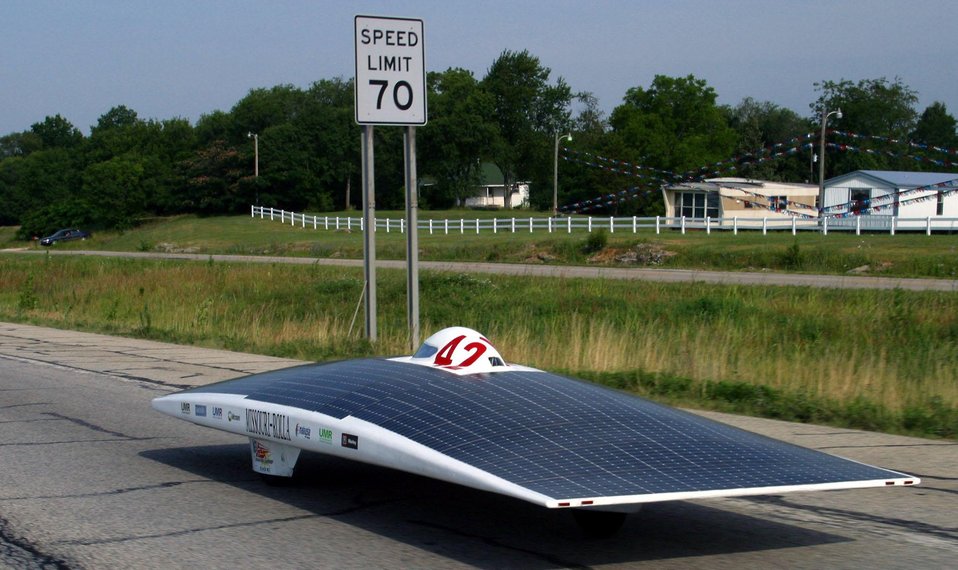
UNIVERSITY OF MISSOURI-ROLLA GOING AT SPEED LIMIT ON ROUTE 66 TOWARD JOPLIN, MO. DURING THE AMERICAN SOLAR CHALLENGE.

THE AMERICAN SOLAR CHALLENGE, THE LONGEST SOLAR CAR RACE IN THE WORLD, IS A DOE SPONSORED EDUCATIONAL EVENT IN WHICH TEAMS COMPETE TO BUILD AND RACE SOLAR-POWERED CARS. TWENTY UNIVERSITIES PARTICIPATED IN THIS YEAR'S EVENT WHICH STARTED IN CHICAGO, ILLINOIS ON JULY 13 AND FOLLOWED ROUTE 66 FOR 2300 MILES TO CLAREMONT, CALIFORNIA, ENDING ON JULY 23, 2003. THE UNIVERSITY OF MISSOURI-ROLLA WON BY FINISHING IN 51 HOURS, 47 MINUTES AND 39 SECONDS.